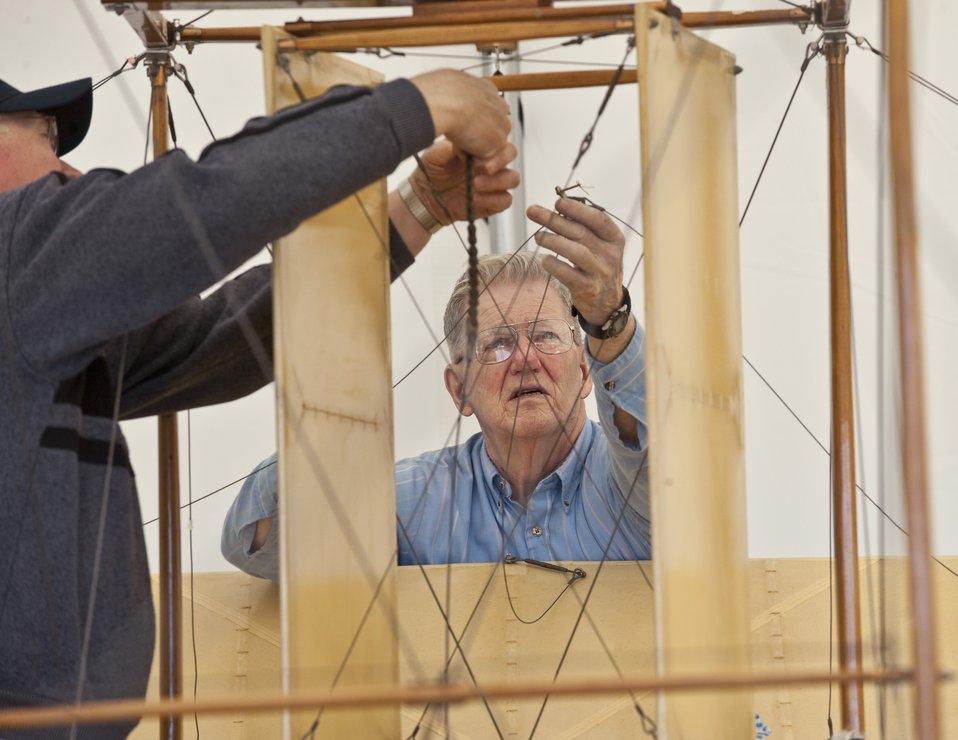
Wright

Don Gum (left), Wright